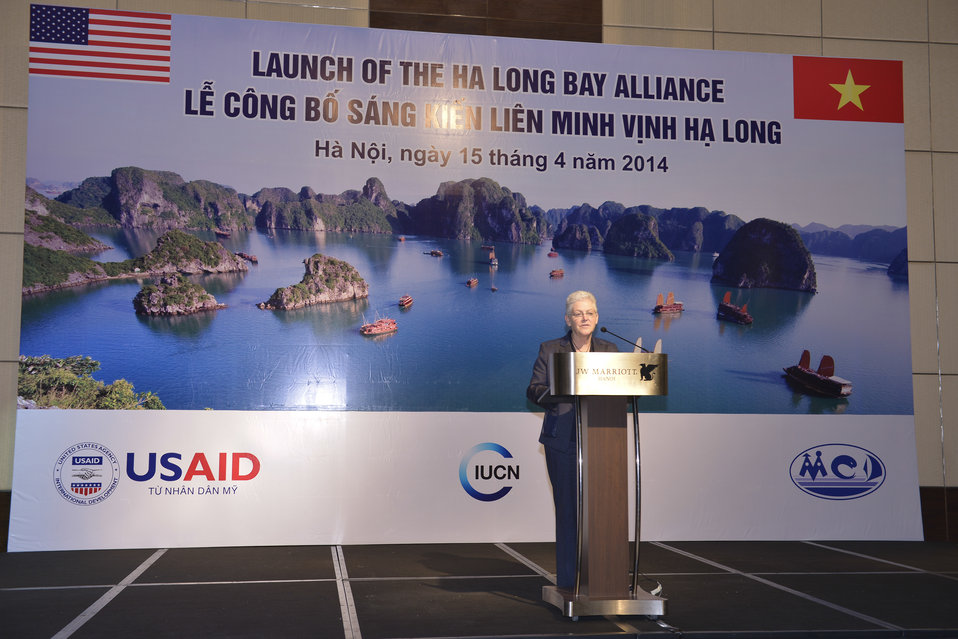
U.S. Environmental Protection Agency Administrator Gina McCarthy speaks at the launching ceremony.

Hanoi, April 15, 2014.